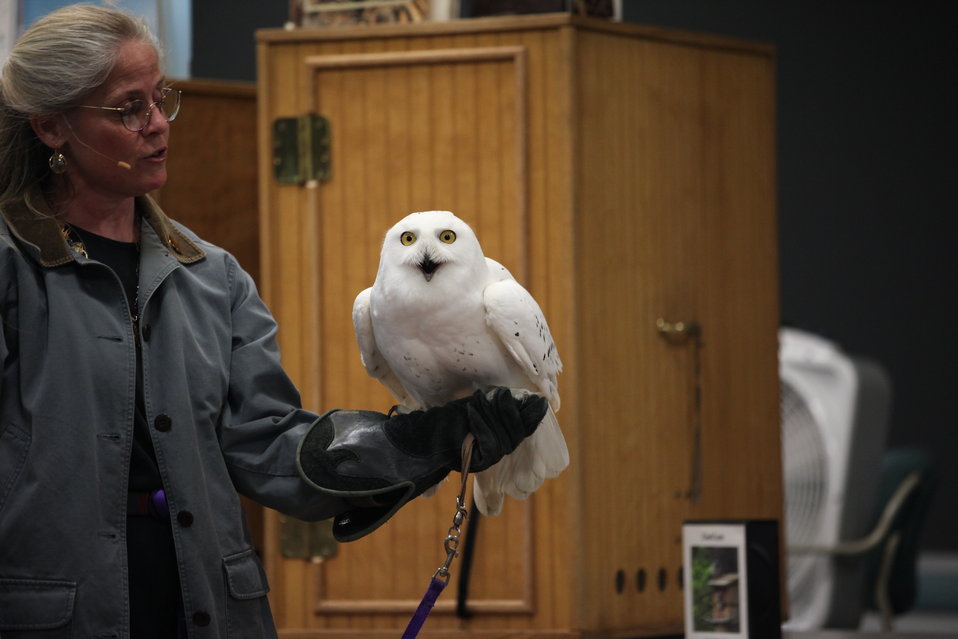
Snowy Owl at bird show during the fishing derby on May 7th.